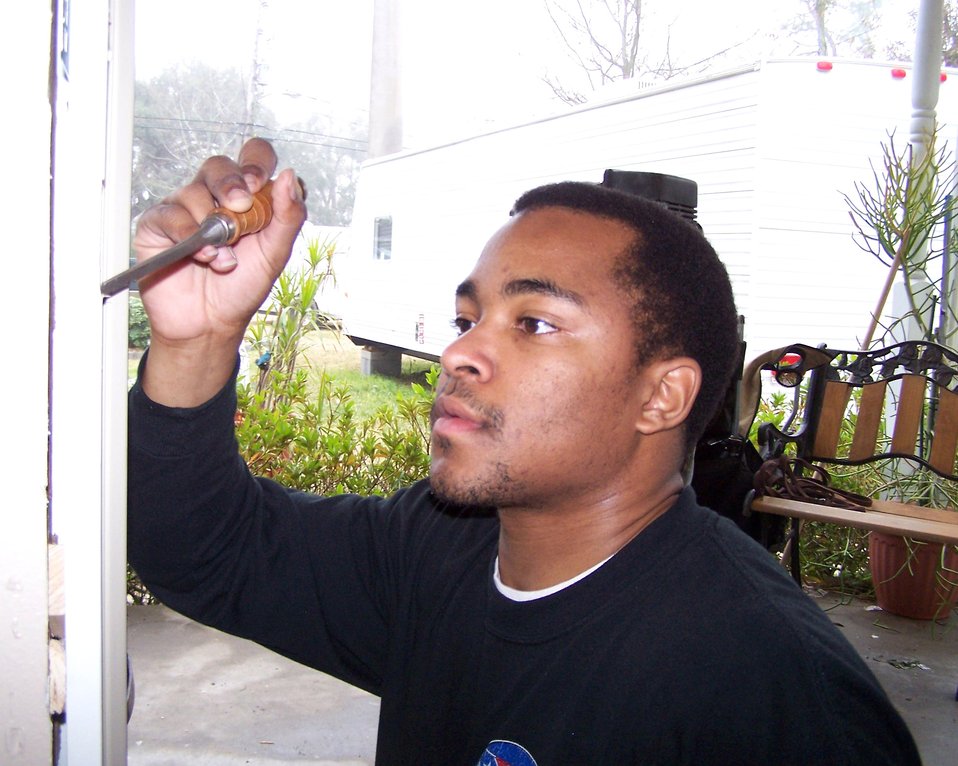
Airmen help pick up the pieces for those in need

Senior Airman Anthony Nelson works on repairing a door frame in a home in Bay St. Louis, Miss. The home was damaged by Hurricane Katrina more than a year ago. Airman Nelson is a 354th Communications Squadron photographer from Eielson Air Force Base, Alaska. He was one of five Airmen who travelled from Eielson AFB to the Gulf coast to repair Hurricane Katrina-damaged homes.